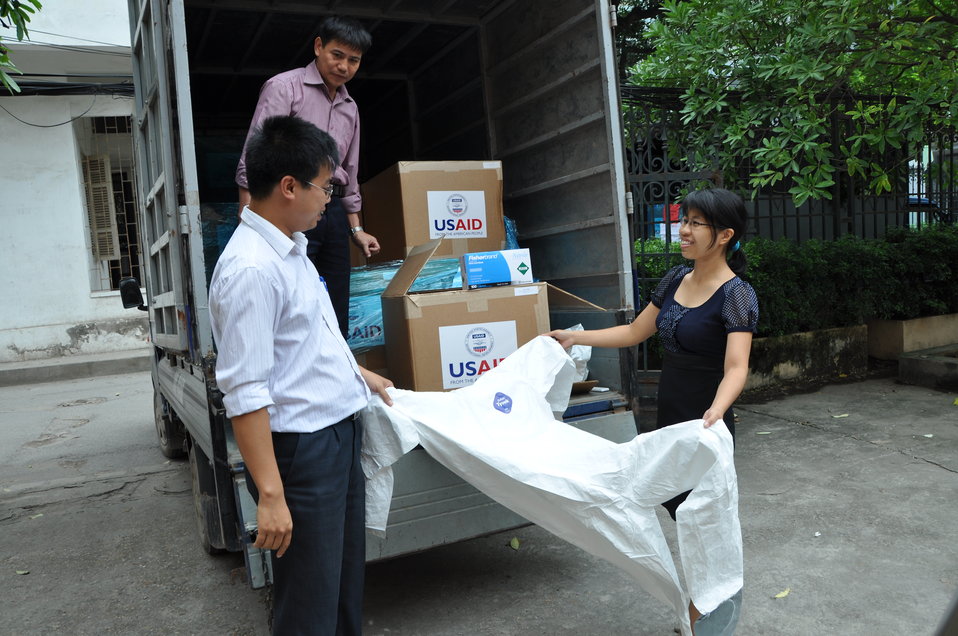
Vietnamese officials inspect new personal protective equipment in Hanoi in September 2011.

Nguyen Dug Hanh of Vietnam's Department of Animal Health (on truck), transport supervisor Doan Phu Huyen (left) and Nguyen Thi Thanh Diep inspect a shipment of 1,700 personal protection kits -- suits, masks, gloves, goggles and related items -- in September 2011 before they are shipped to Can Tho, Ha Nam, Hung Yen, Kieng Giang, and Quang Tri provinces to help veterinary officials and animal health workers battle disease outbreaks in the country. Since 2007, USAID has provided over 15,000 protective equipment kits for animal health workers in Vietnam.